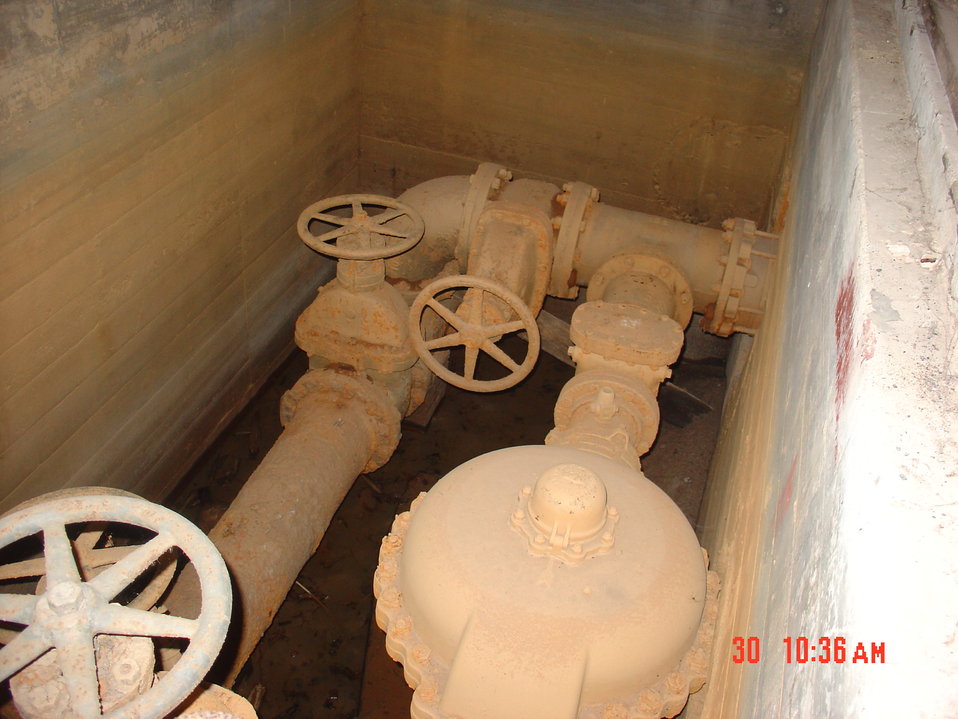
NFSS Building 401 pipes.
Activities from the Niagara Falls Storage Site, which is associated with the former Lake Ontario Ordnance Works. Formerly Utilized Sites Remedial Action Program (FUSRAP), a program initiated in 1974 to identify, investigate and clean up or control sites that were part of the Nation's early atomic energy and weapons program. Activities at the sites that are eligible for FUSRAP were conducted by Manhattan Engineer District (MED) or the Atomic Energy Commission (AEC), both predecessors of the Department of Energy (DOE). The U.S. Army Corps of Engineers was assigned management of FUSRAP by Congress in 1997.